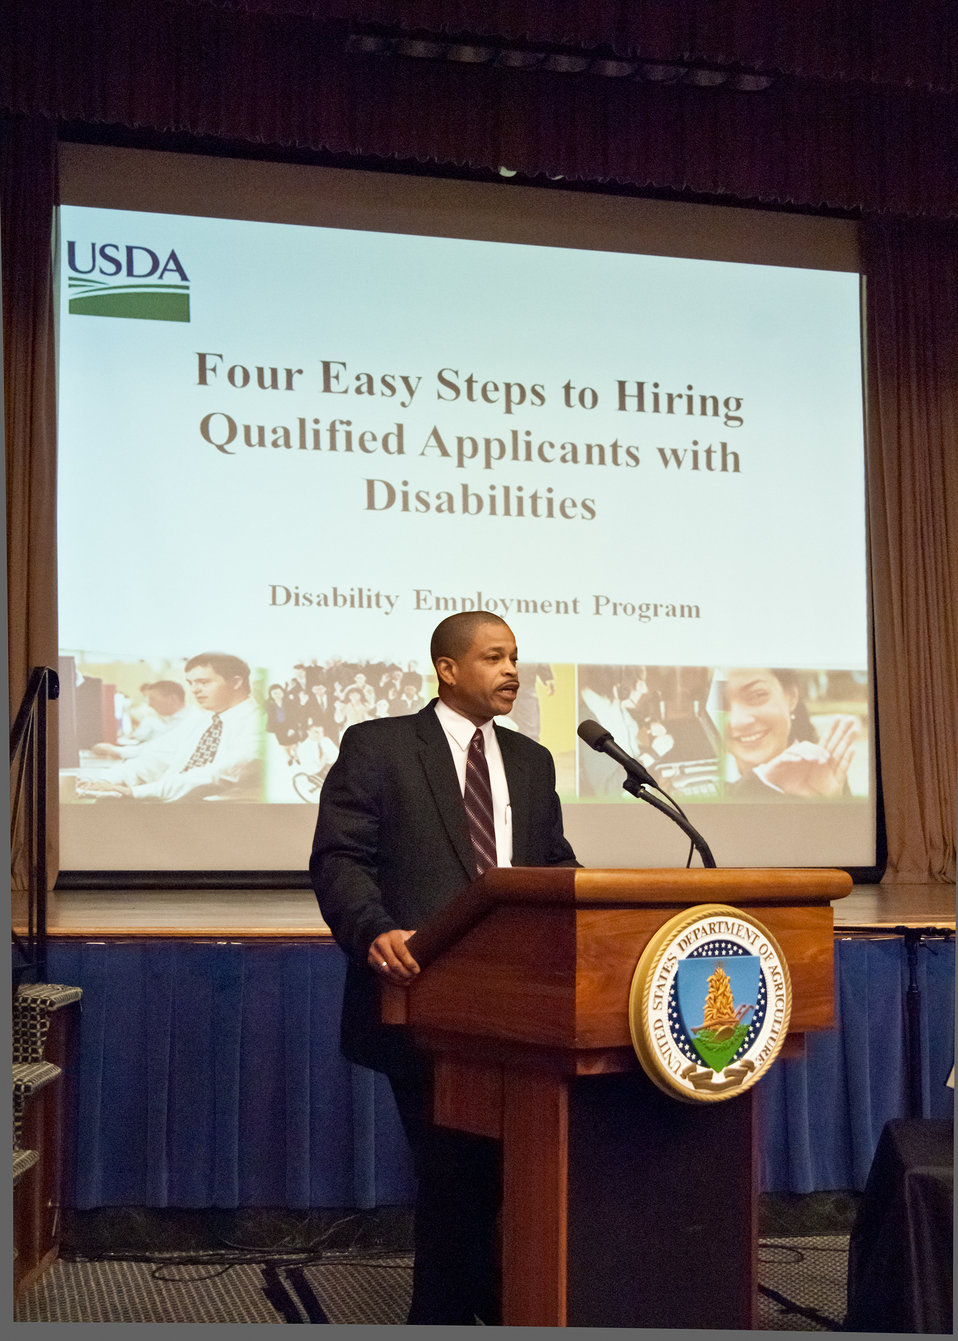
William P. Milton, Jr., Deputy Director, Office of Human Resources Management explained the “Four Easy Steps to Hiring Qualified Applicants with Disabilities” to USDA employees during National Disability Employment Awareness Month event in Washington, DC, on Wednesday, October 5, 2011. Agriculture Secretary Tom Vilsack is dedicated to establishing the USDA as the lead Federal agency in employing individuals with disabilities. The theme for the event is “Profit by Investing in Workers with Disabilities.” USDA is committed to ensuring that all our programs are accessible and inclusive of individuals with disabilities.